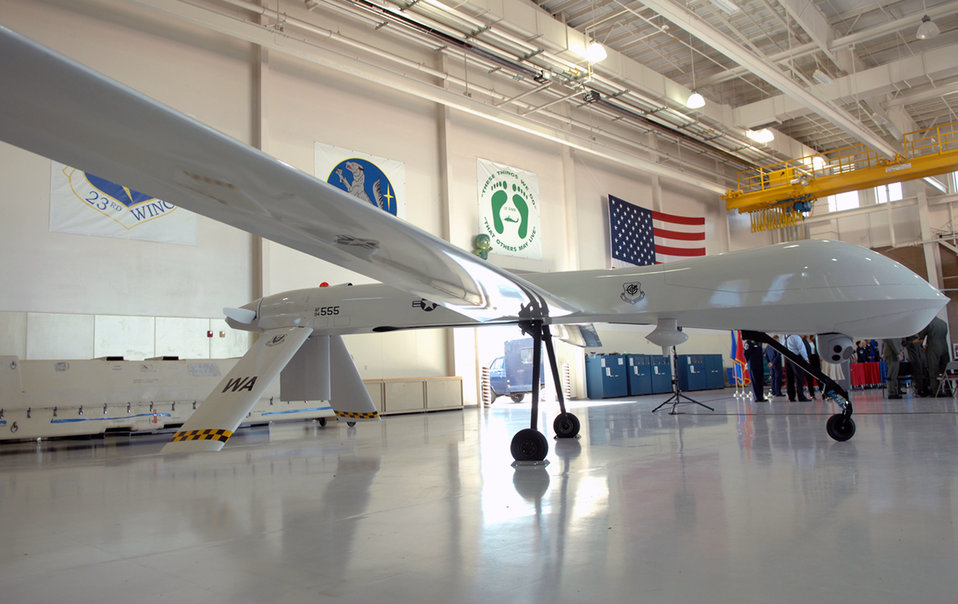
Air Guard Predator pilots increase combat air patrols

An MQ-1 Predator unmanned aircraft assigned to the Arizona Air National Guard's 214th Reconnaissance Group is parked in a hanger at Davis-Monthan Air Force Base, Ariz., following the unit's activation in August 2007.